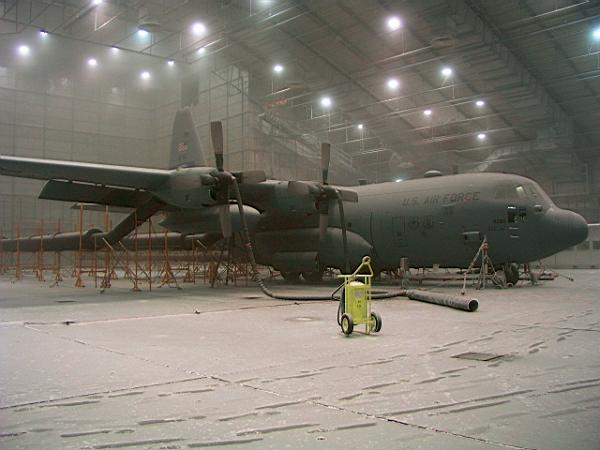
Cold-temperature test

EGLIN AIR FORCE BASE, Fla. -- A C-130 Hercules aircraft from 908th Airlift Wing at Maxwell Air Force Base, Ala., undergoes cold-temperature testing at the McKinley Climatic Laboratory here. Air Force Reserve Command and the Air National Guard will be the first air components to modernize their fleets of C-130 cargo aircraft with new avionics.